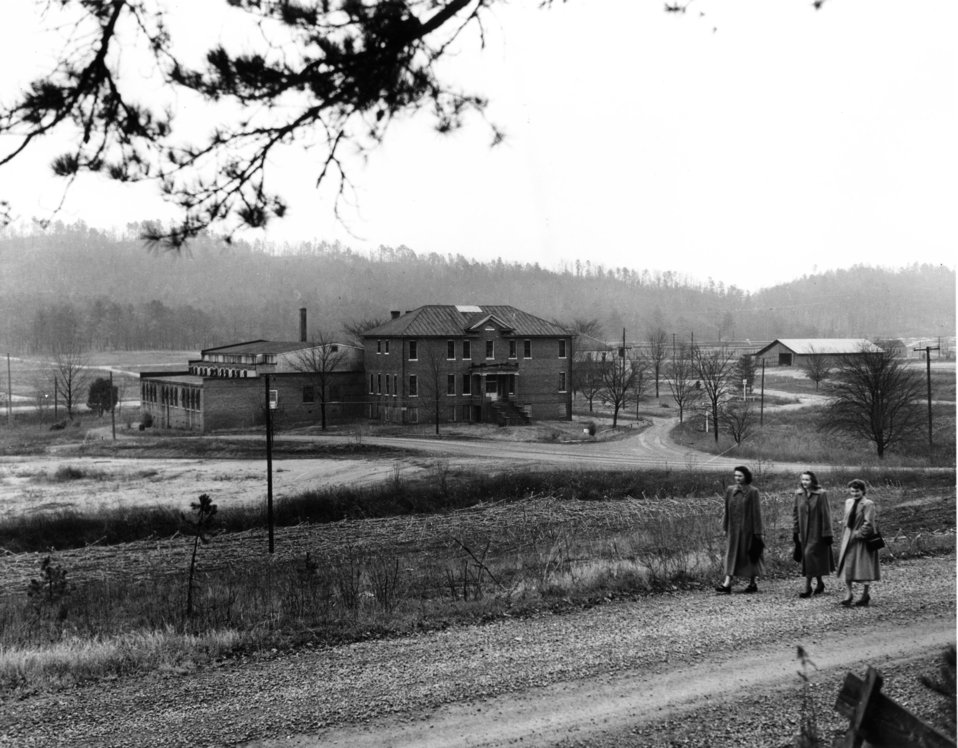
Early settlers at Oak Ridge